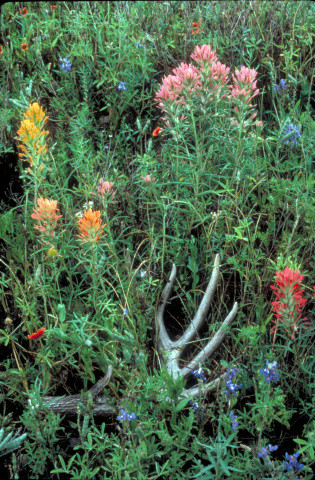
prairie paintbrush